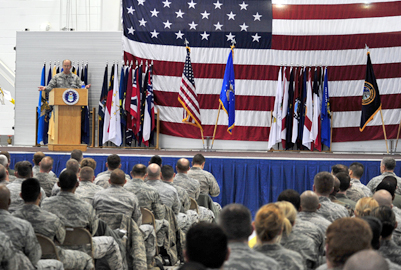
No higher calling

Gen. Kevin P. Chilton speaks Nov. 30, 2010, at Minot Air Force Base, N.D. General Chilton's visit highlighted the nuclear deterrence role of Minot AFB Airmen in the Air Force Global Strike Command mission. General Chilton is the U.S. Strategic Command commander.